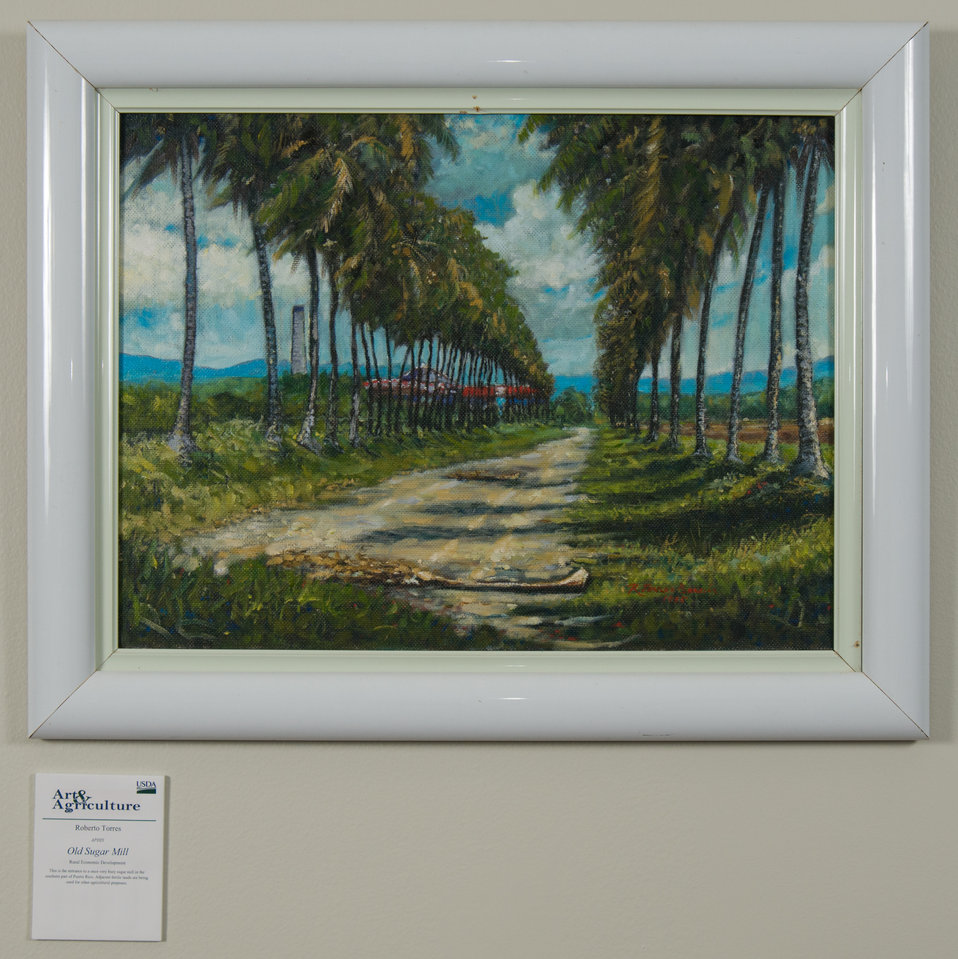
Online Viewer's Choice entries of the 2013 Art & Agriculture, Tuesday, July 9, 2013, in the South Building, Washington, D.C. Themes were expressed by employees from across the department and the contest was open to full-time and part-time USDA employees. Winning artwork will be displayed till the end of the year. U.S. Artistic expression is a creative outlet that is vital for an individual to grow and develop.